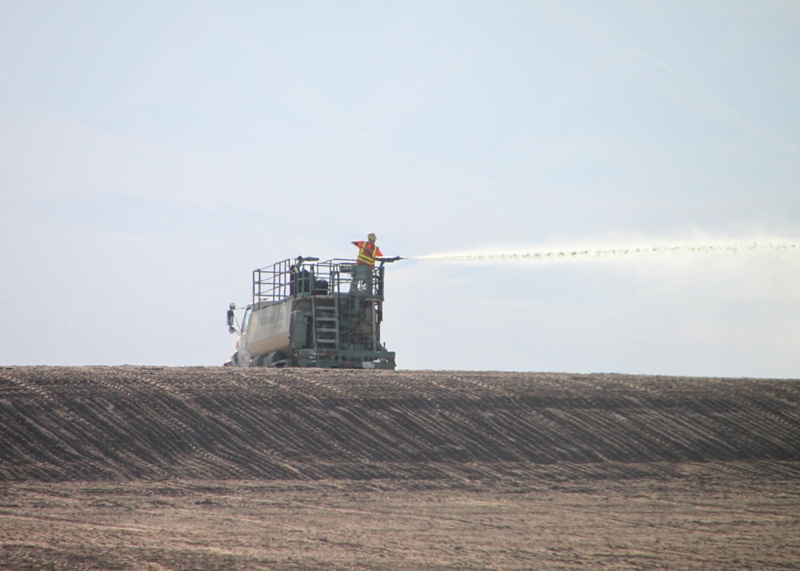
Recovery Act Workers Remediate and Restore Former Waste Sites

Recovery Act workers with CH2M
HILL Planteau Remediation Company and subcontractors
Wildlands Inc. and Ojeda Business
Ventures LLC revegetated 166 acres across 12
former waste sites.

The largest of the sites, known as the BC Control Area, is an approximately 13-square-mile area associated with a waste disposal system used during Hanford operations. Recovery Act workers remediated and reseeded a densely contaminated 140-acre portion of that area after disposing of more than 370,000 tons of contaminated soil.